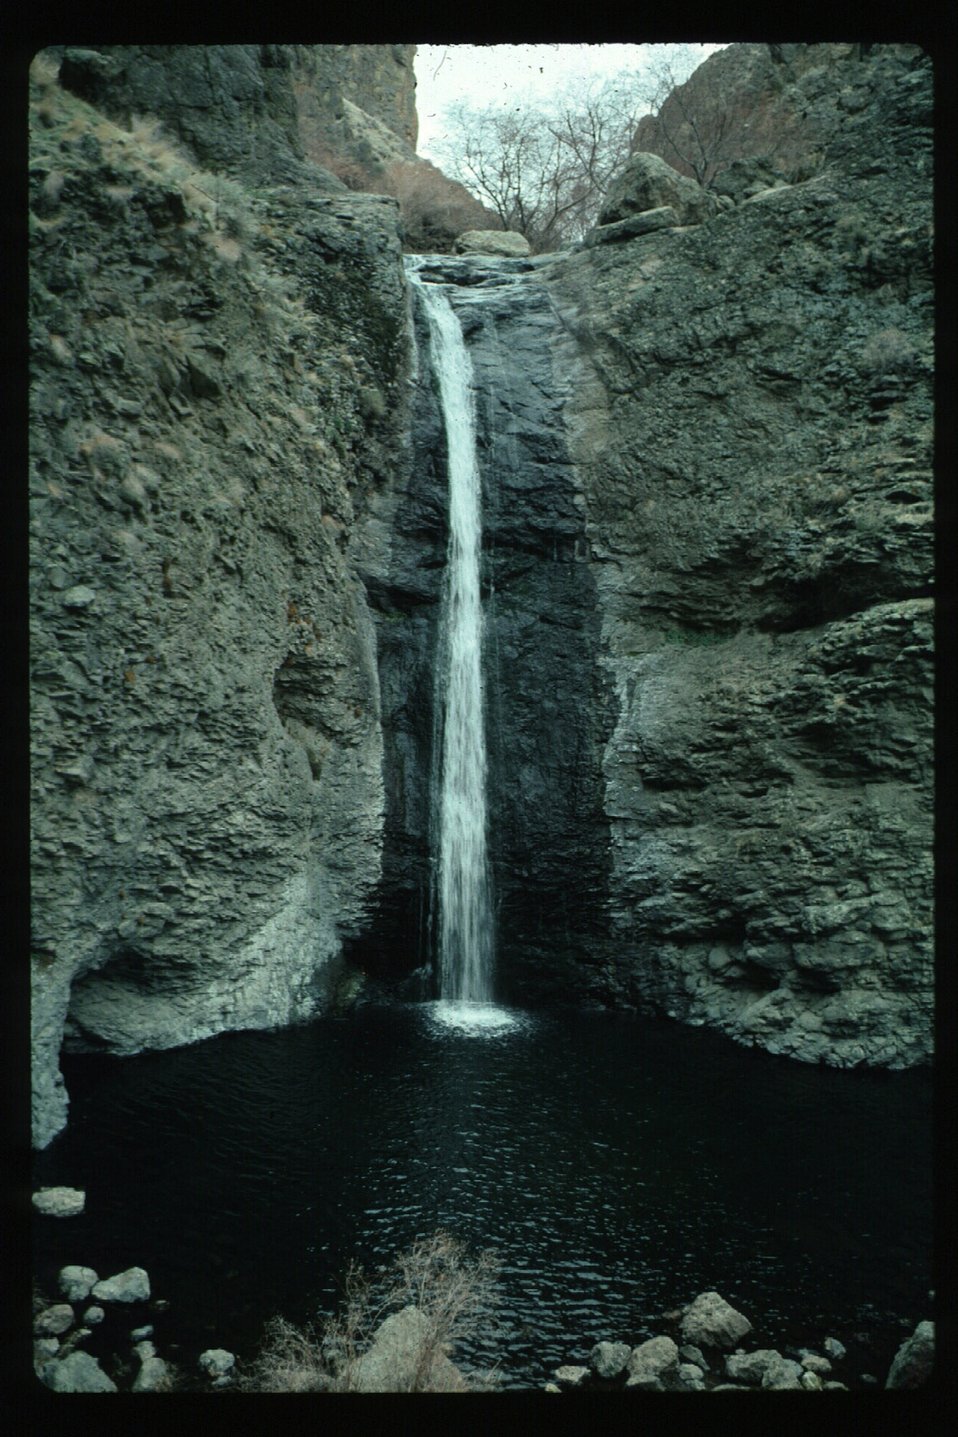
Scenic Jump Creek Falls LSRD Lower Snake River District